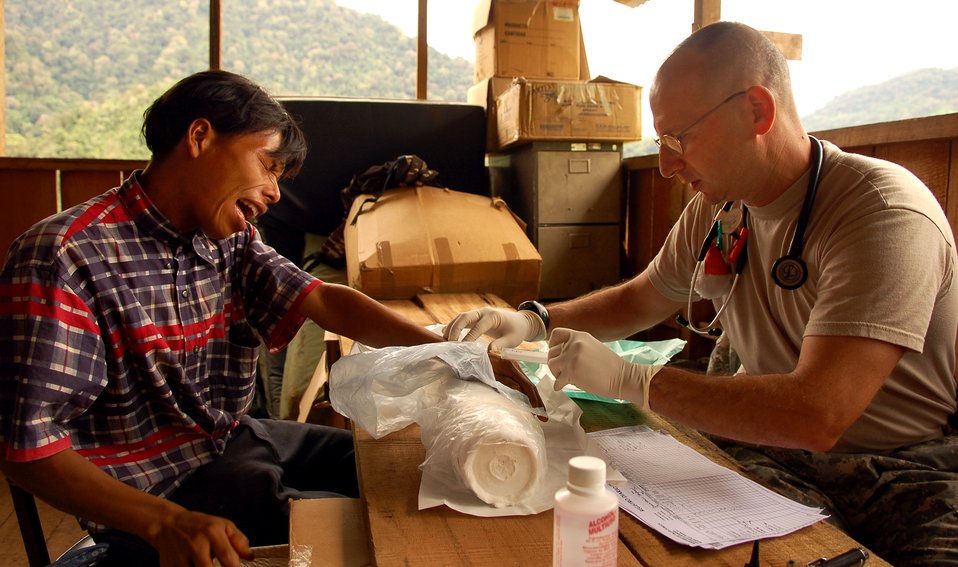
American servicemembers deploy to Costa Rica

Army Col. (Dr.) Stephen Bernstein administers a shot to a native Costa Rican man at a makeshift clinic Dec. 18 at Piedra Mesa, Costa Rica. Colonel Bernstein is assigned to the Joint Task Force-Bravo medical element. JTF-Bravo deployed 28 servicemembers from Soto Cano Air Base, Honduras, to Costa Rica at the invitation of the country's ministry of health for a medical readiness training exercise.